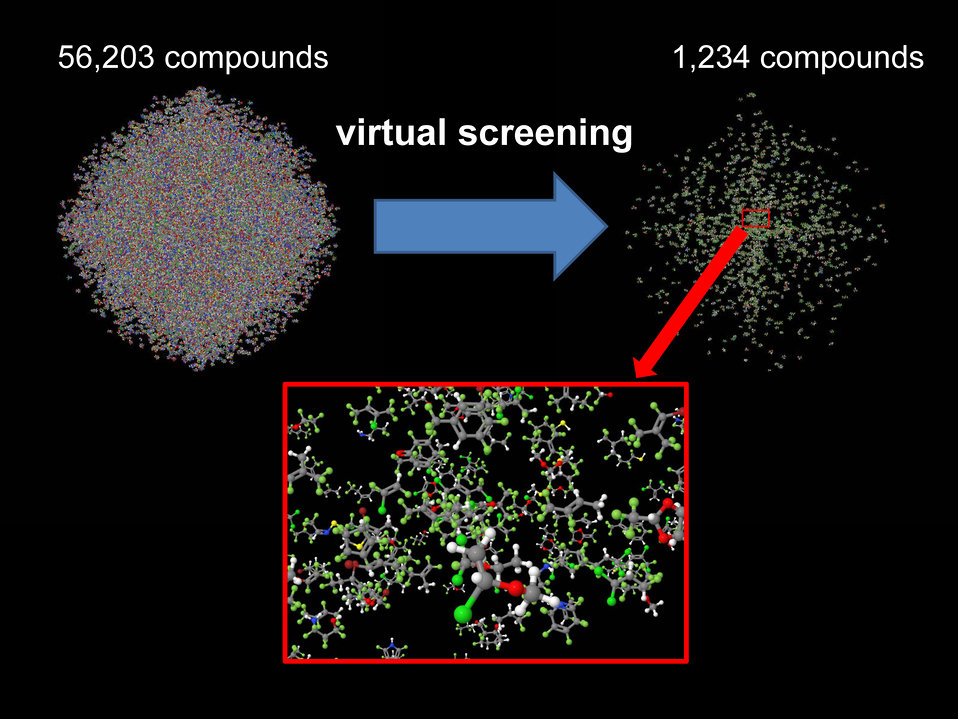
Refrigerant Fluids

To help industry find refrigerant fluids with low global warming potential (GWP), NIST researchers screened 56,203 compounds and identified 1,234 candidates for further study.